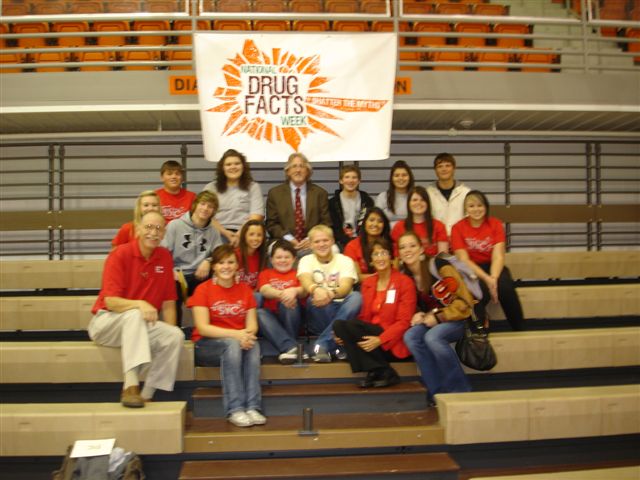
Sallisaw County Oklahoma Event

Volunteers from the Sallisaw Youth Coalition and the Community Anti-Drug Coalitions of America gathered for a photo after planning a well attended event during National Drug Facts Week, featuring Michael Snowden, Oklahoma Bureau of Narcotics and Dangerous Drugs Agent-in-charge (3rd from left, top row.)